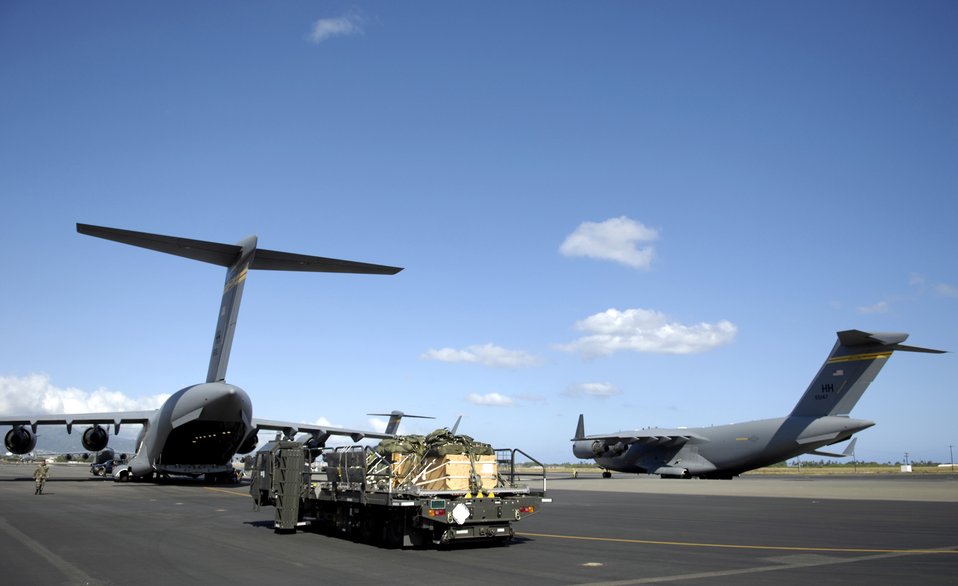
Load em' up, drop em' out

A 15th Logistics Readiness Squadron's K-Loader holds practice bundles ready to be loaded onto a C-17 Globemaster III June 11 at Hickam Air Force Base, Hawaii. The 535th Airlift Squadron is running the C-17's quarterly airdrop qualifications.